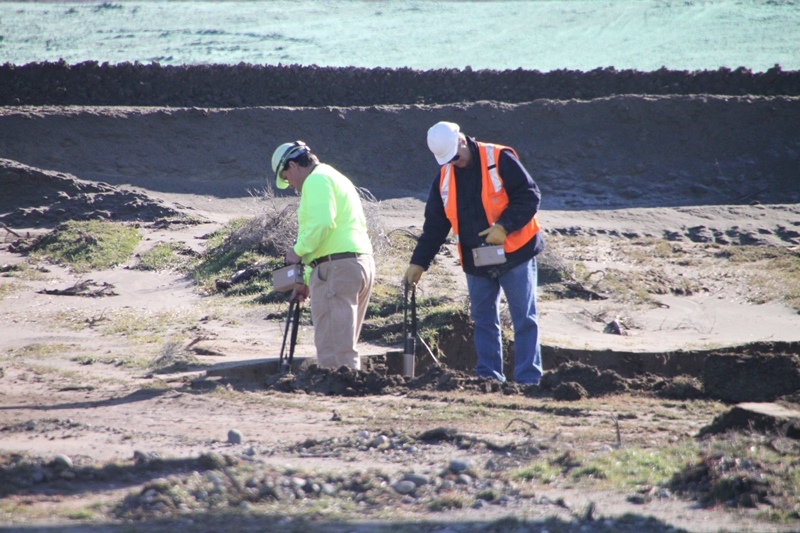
Surveying Zone A of BCCA

Survey work being conducted at Hanford.